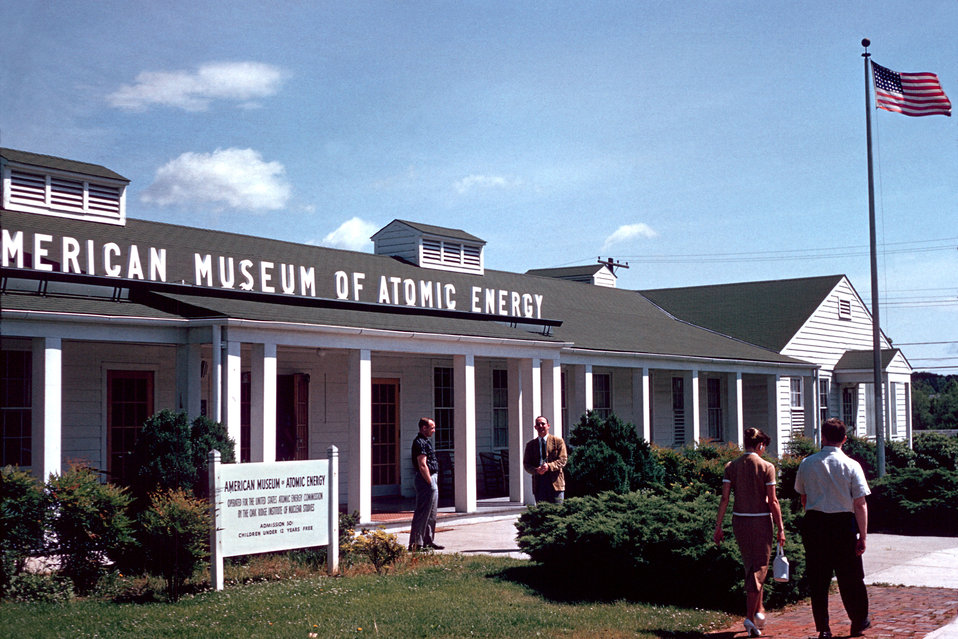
American Museum of Atomic Energy Oak Ridge

DOE photo Ed Westcott 1960s Oak Ridge Tennessee